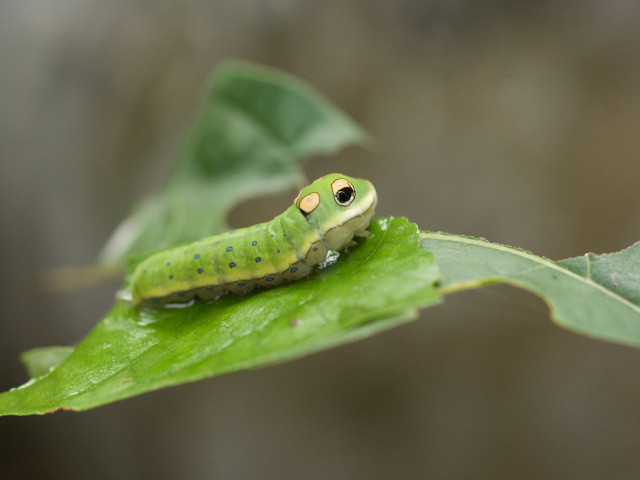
spicebush swallowtail butterfly larva